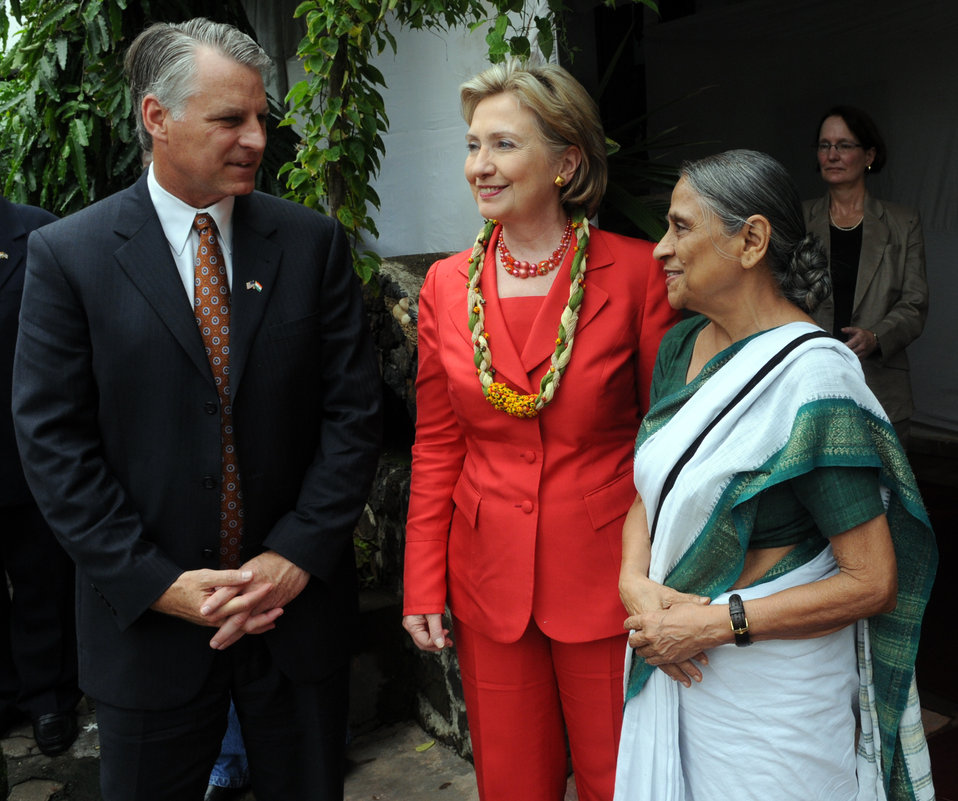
Secretary Clinton Visits SEWA Outlet

U.S. Secretary of State Hillary Rodham Clinton and U.S. Ambassador-Designate to India Timothy J. Roemer welcomed by SEWA Founder Ela Bhatt at the Hansiba outlet at Napean in Mumbai, India July 18, 2009.